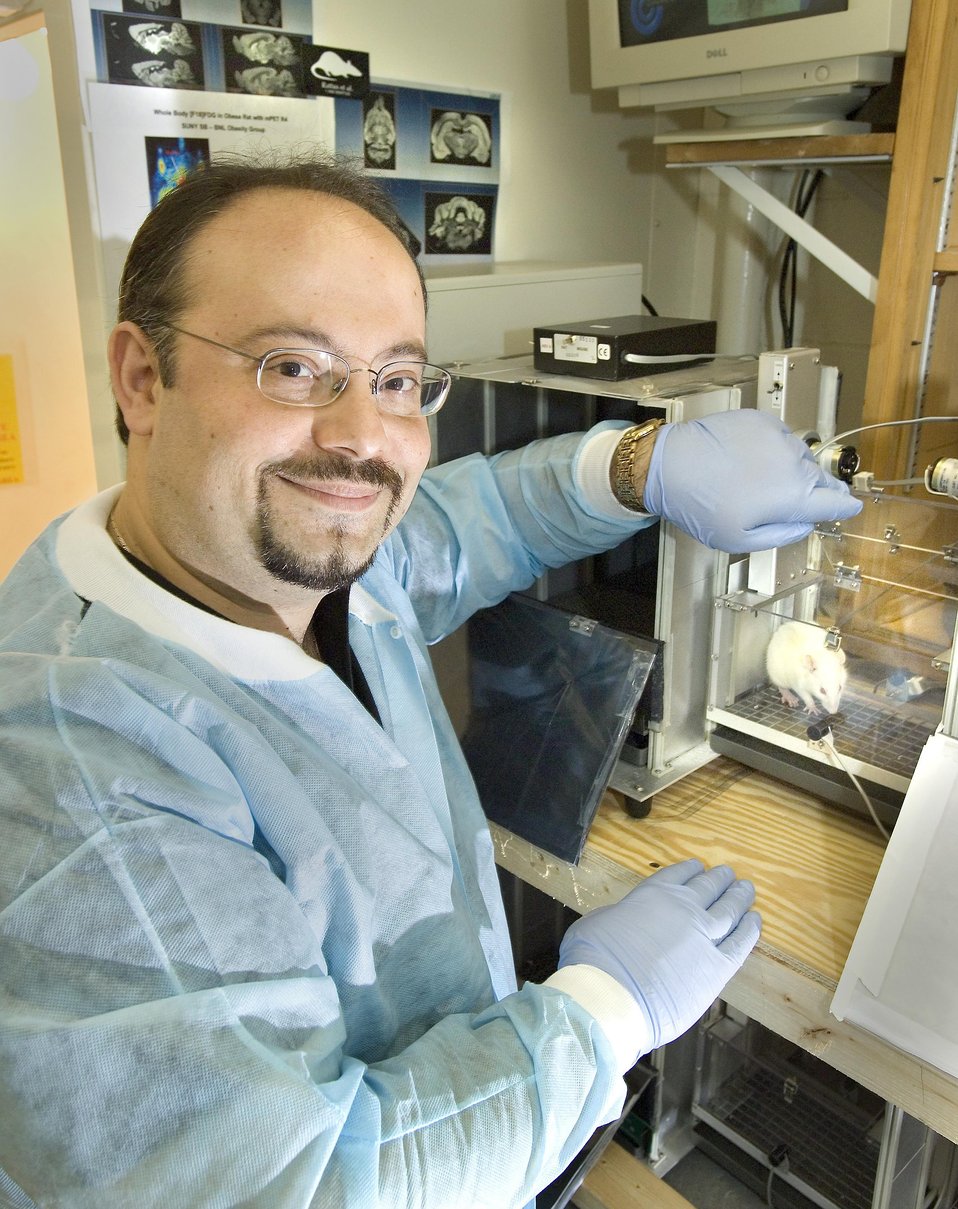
BNL SCIENTIST RESEARCHES A NEW EXPERIMENT IN MICE THAT SHOWS A BRAIN RECEPTOR ASSOCIATED WITH THE REINFORCING EFFECTS OF MARIJUANA ALSO HELPS TO SIMULATE THE REWARDING AND PLEASURE EFFECTS OF ALCOHOL.

THE RESEARCH ESTABLISHES A GENETIC BASIS FOR SUSCEPTIBILITY TO ALCOHOL ABUSE AND ALSO SUGGESTS THAT DRUGS DESIGNED TO BLOCK THESE RECEPTORS COULD BE USEFUL IN TREATMENT.